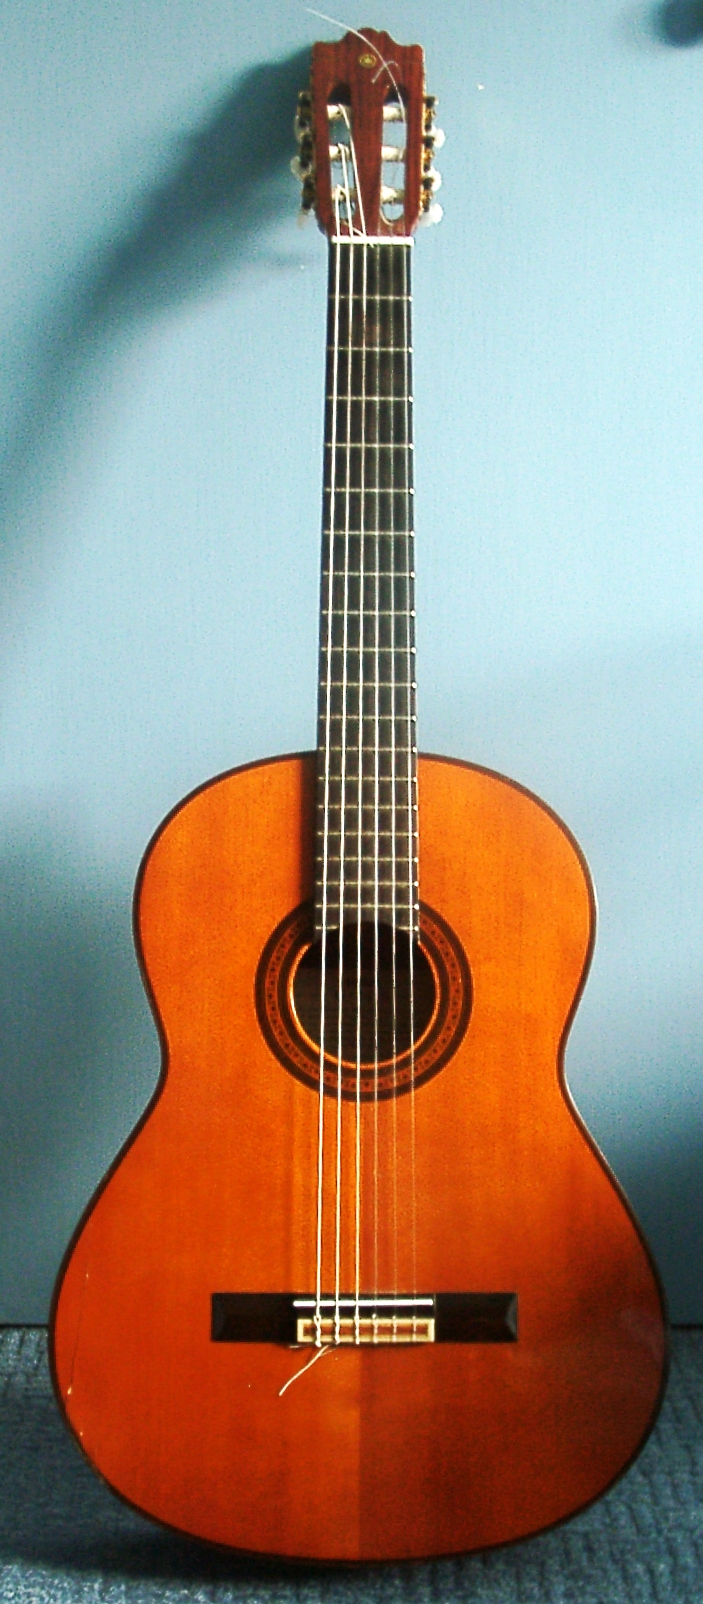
Yamaha G-245S classical guitar. Yamaha G-245S, photographed by me, 21-10-2006. Intended for use on Wikipedia, may be used elsewhere without permission.